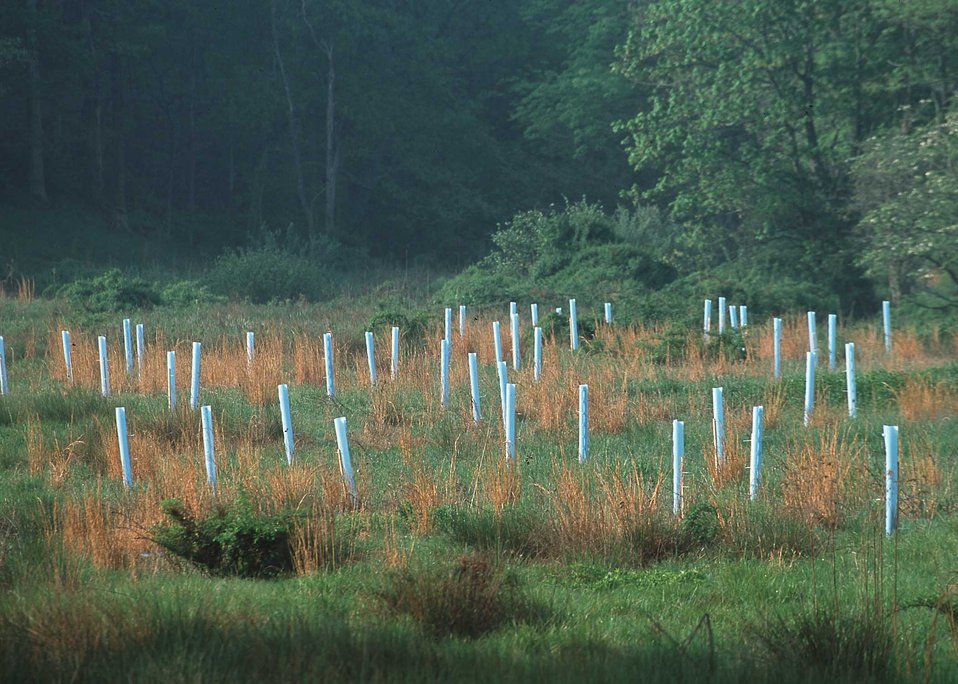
Wetland Reserve Program site showing tree planting and wetland restoration practices, Marion, Virginia.